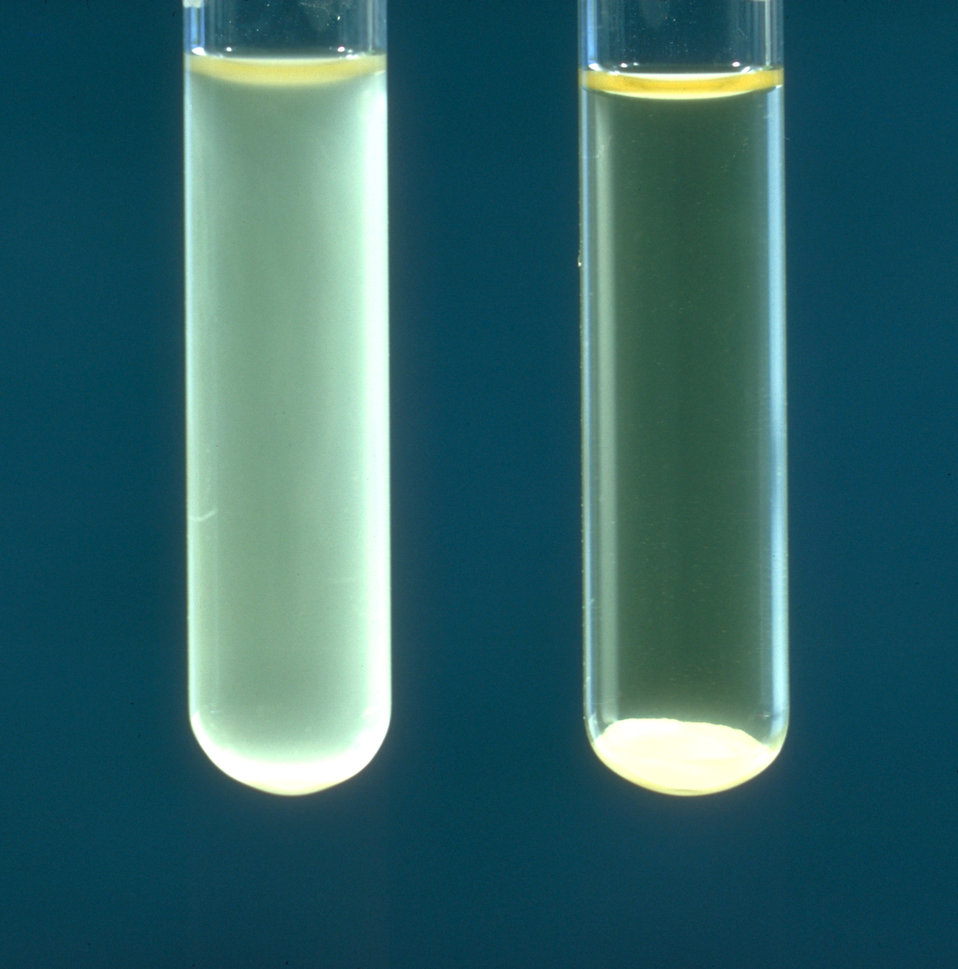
Trypticase soy broth culture of Enterobacter sakazakii (right), and Enterobacter cloacae (left).